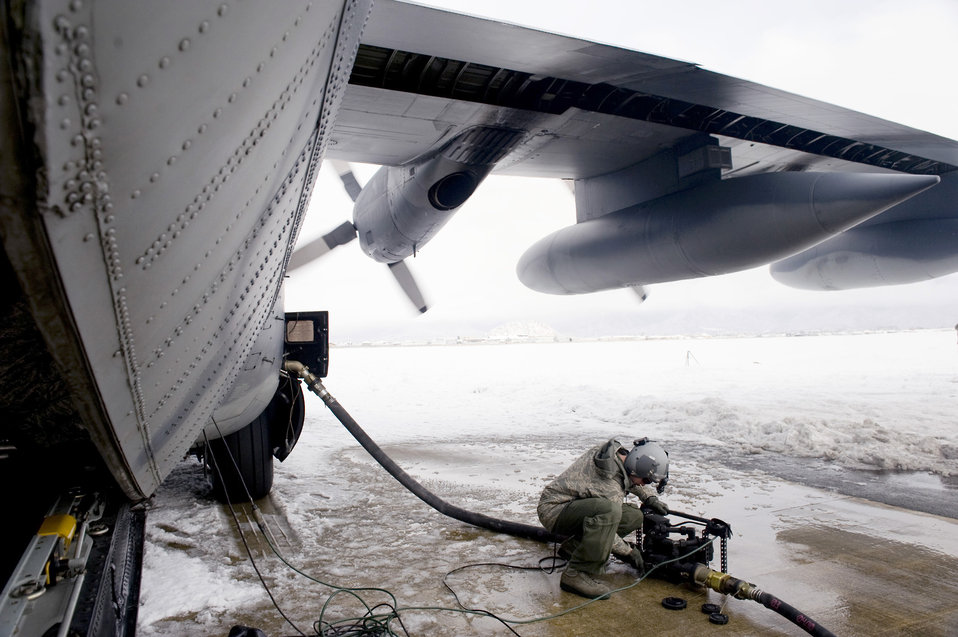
Forward area refueling point

Staff Sgt. Nicholas Wisnoski turns off a defueling pump for an MC-130P Combat Shadow March 17, 2011, at Yamagata Airport, Japan. Sergeant Wisnoski is a loadmaster assigned to the 353rd Special Operations Group.